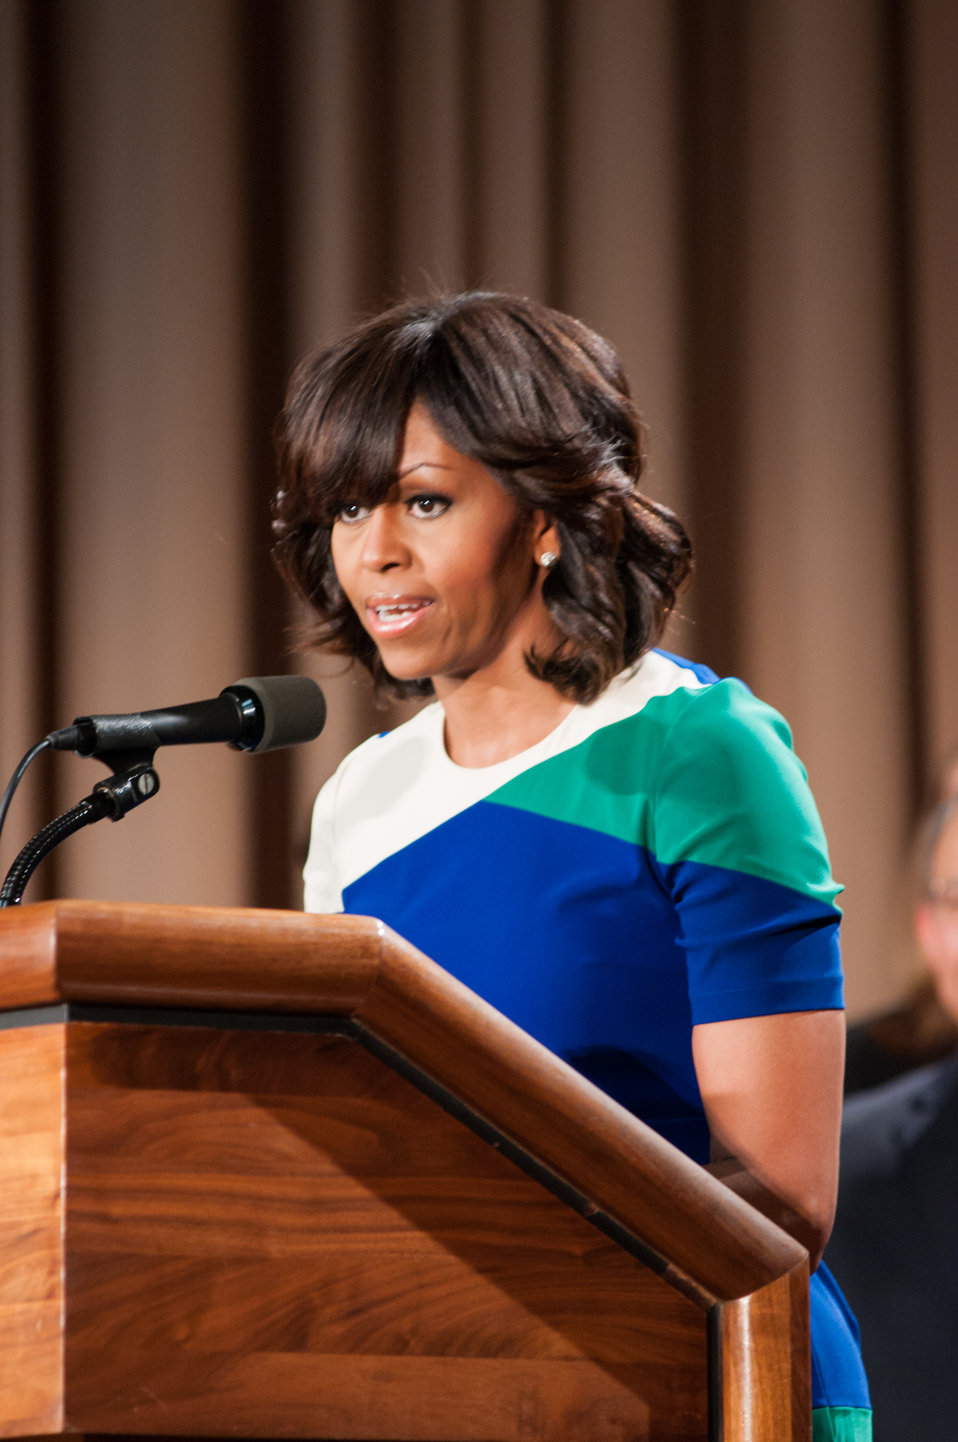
First Lady Michelle Obama thanks U.S. Department of Agriculture (USDA) employees for their service and dedication at the Jefferson Auditorium, USDA on Friday, May 3, 2013. The First Lady reminded federal workers of the importance of the work they do to support American farmers and ranchers, protecting the environment, lifting up rural communities, and keeping food safe, and working to end hunger.